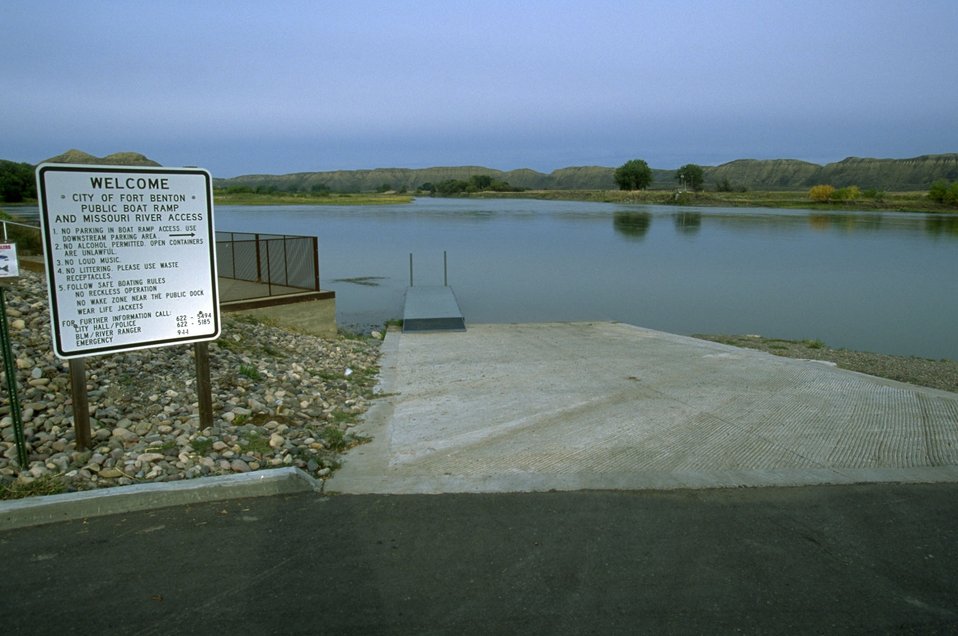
Boat launch at Fort Benton